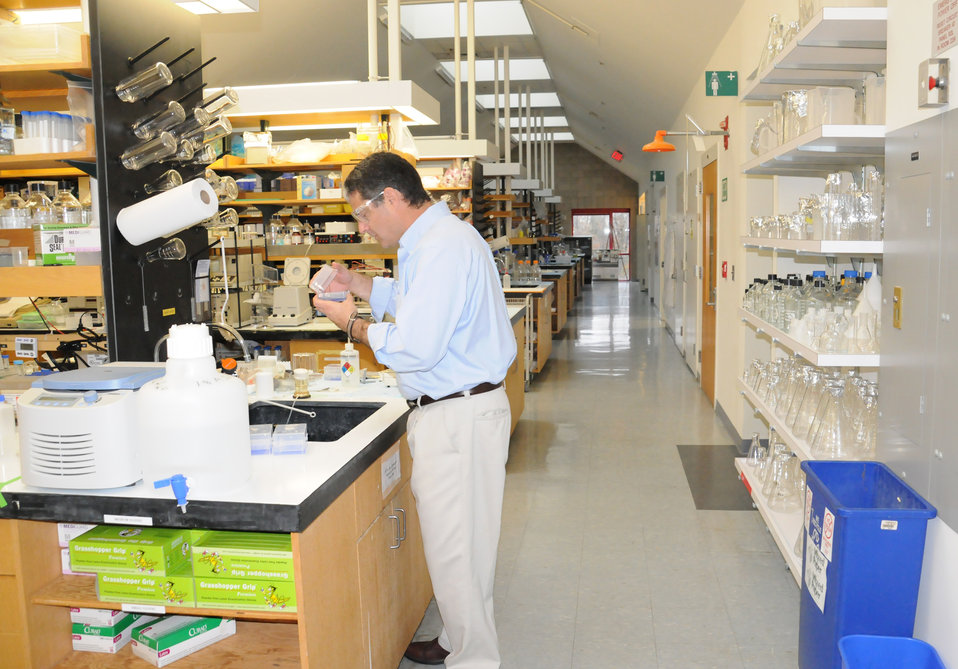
Zvi Kelman, director of NISTs new Biomolecular Labeling Laboratory, works near the labs five user stations. The lab will allow users to tag biological molecules with heavy isotopes for easier analysis.